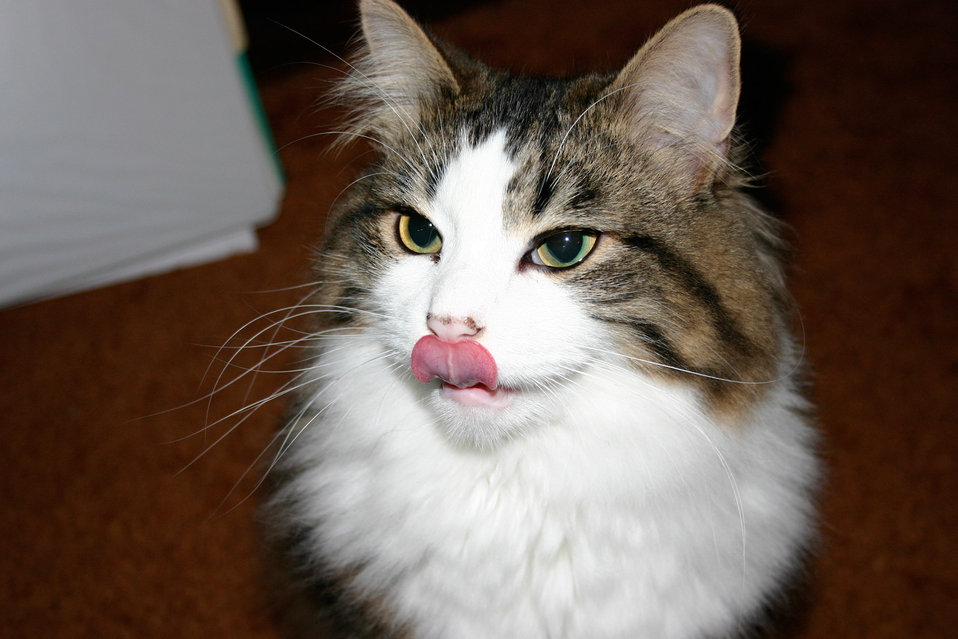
Cat licking lips

Cat licking his lips.